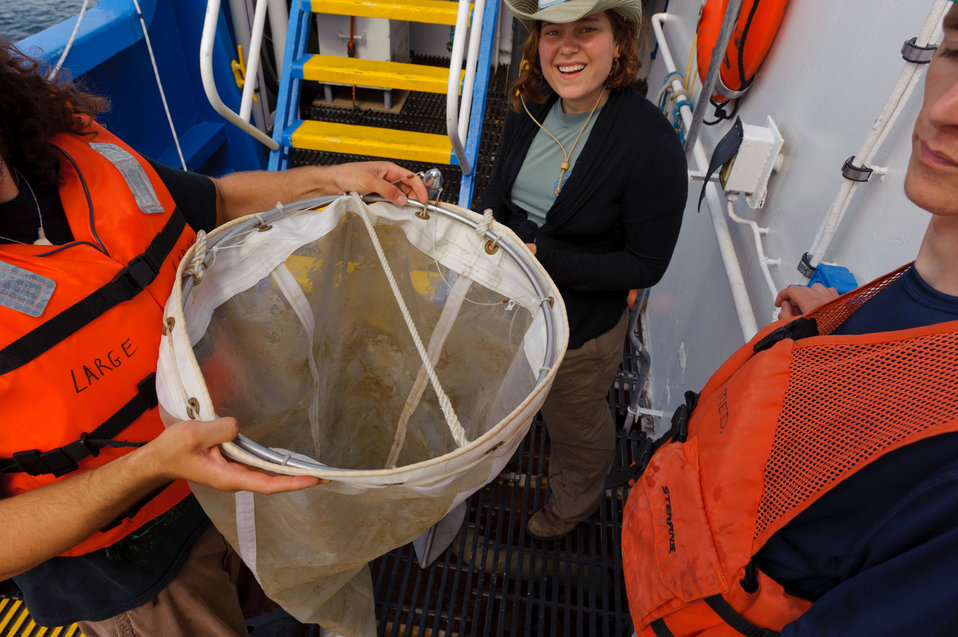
August 8, 2011 Our micro catch!